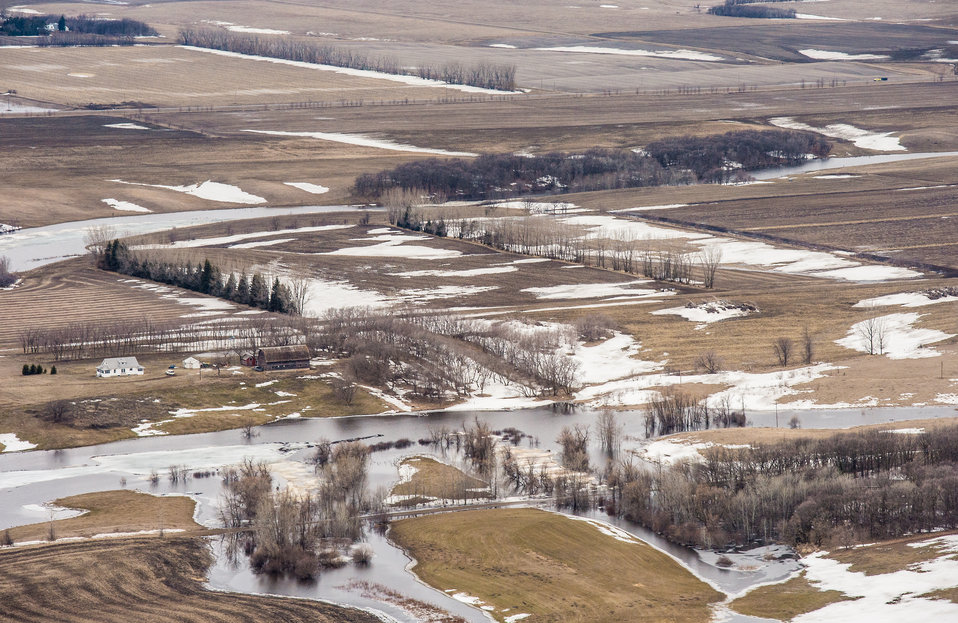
Tongue River Watershed dam T-2-2, Weiler Dam, in Pembina County, ND, part of the Red River basin, on Wednesday, May 1, 2013. To learn about the Red River Basin Initiative, see www.mn.nrcs.usda.gov/news/features13/RRBI.html.